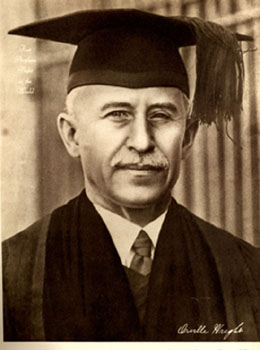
Orville Wright

Early Years -- Orville Wright